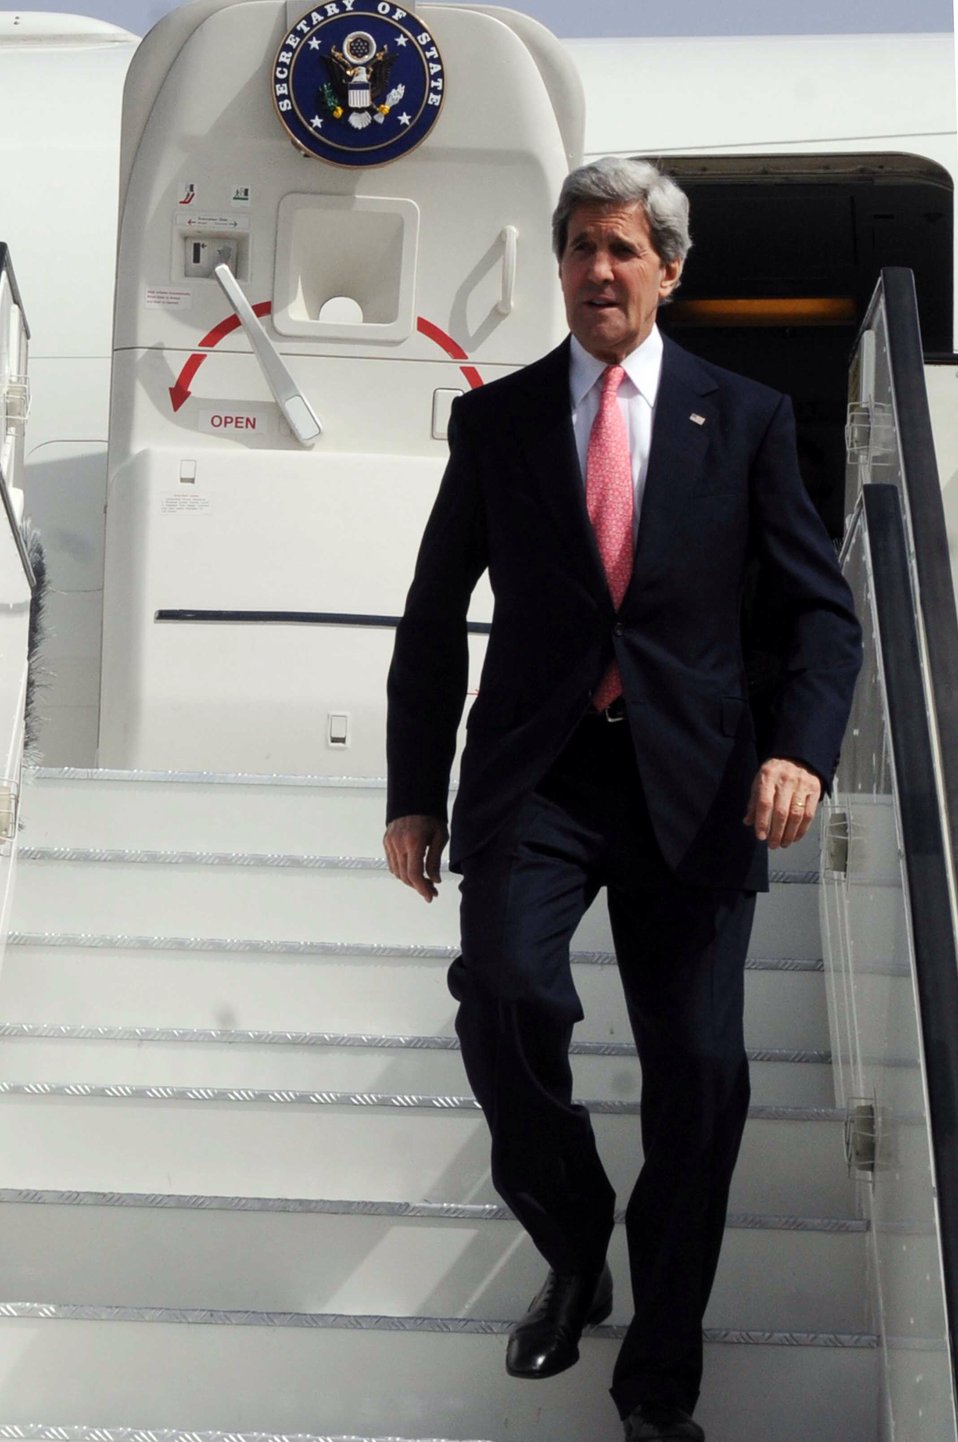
Secretary Kerry Arrives in Cairo, Egypt

U.S. Secretary of State John Kerry arrives in Cairo, Egypt, on March 2, 2013.